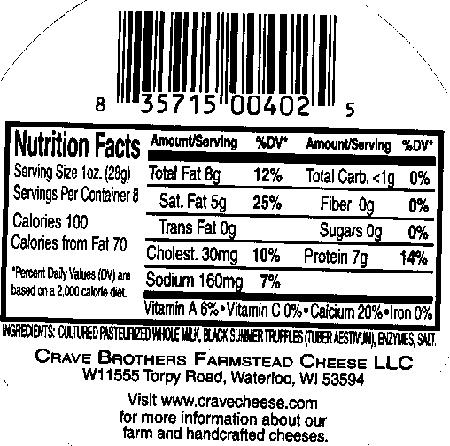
RECALLED – Cheese

July 3, 2013 – Product Recall – Crave Brothers Farmstead Cheese Recalls Les Freres Cheese Products.